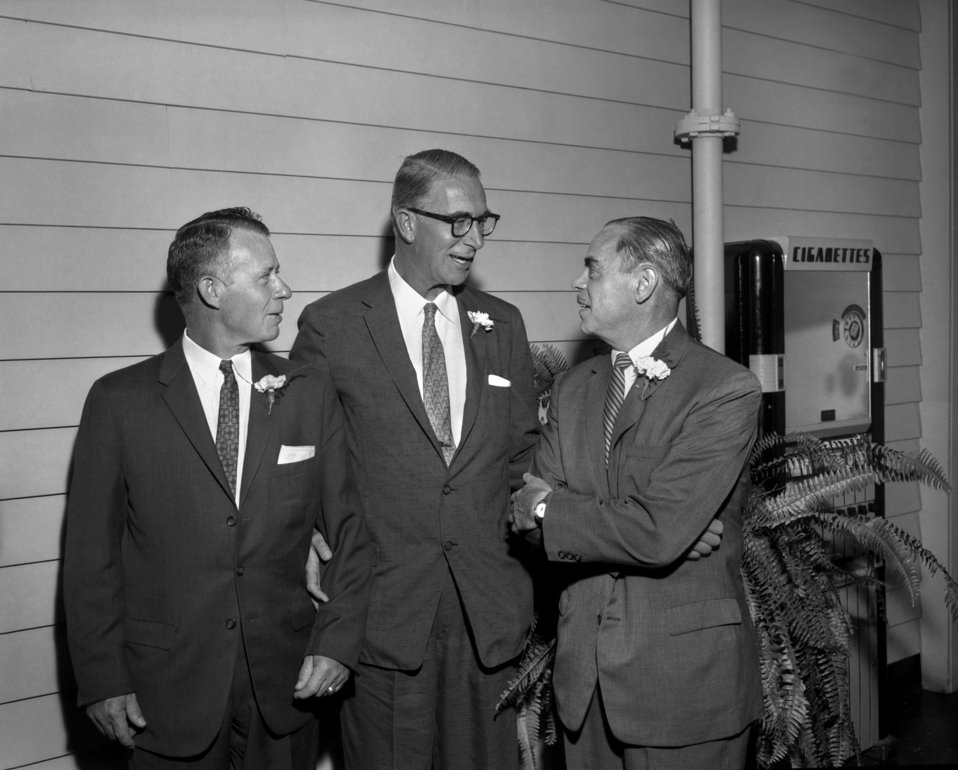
Indepencence Day Ceremonies Oak Ridge

60-0506 DOE photo by Ed Westcott

Indepencence Day Ceremonies Leudelke,Keefofer,Sapirie Oak Ridge Tennessee 6/4/1960